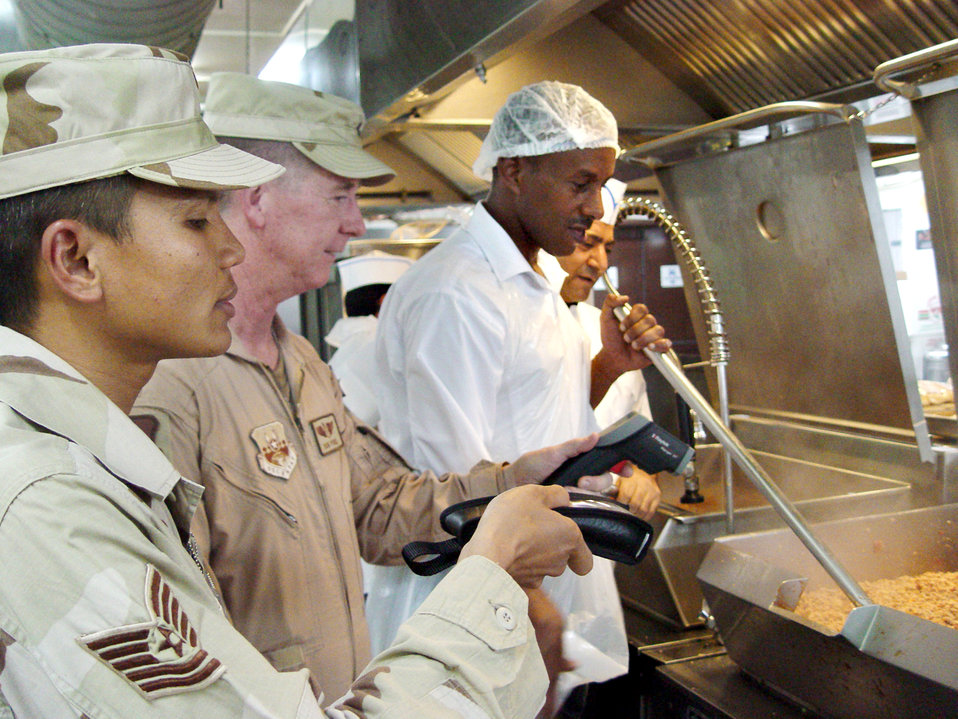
What's cooking?

OPERATION ENDURING FREEDOM -- Tech. Sgt. Henry Reyes (left) and Lt. Col. Ron Poole check the temperature of the food being cooked at a forward-deployed location's dining facility as part of a public health routine kitchen inspection.